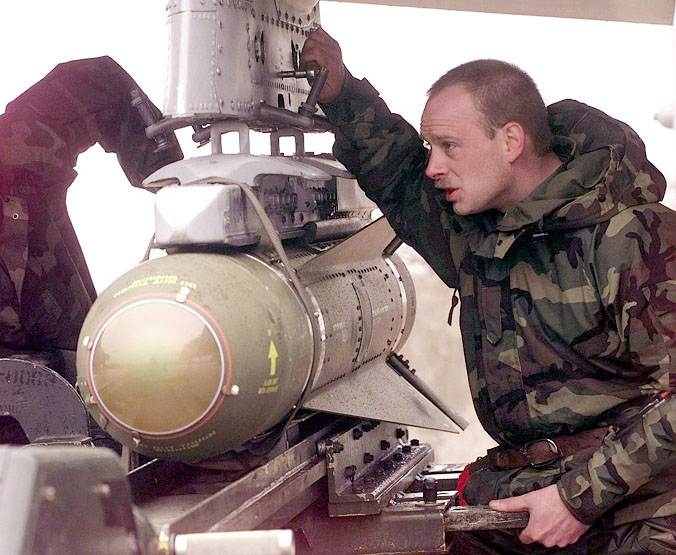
Maverick

1990's -- GIOIA DEL COLLE, Italy -- Staff Sgt. Todd Kenny helps position an AGM-65 Maverick missile underneath the wing of an A-10 Thunderbolt II. Kenny, of Lake Luzerene, New York, is part of the 81st Expeditionary Fighter Squadron. The 81st EFS is based at Spangdahlem Air Base, Germany, and is supporting NATO Operation Allied Force.